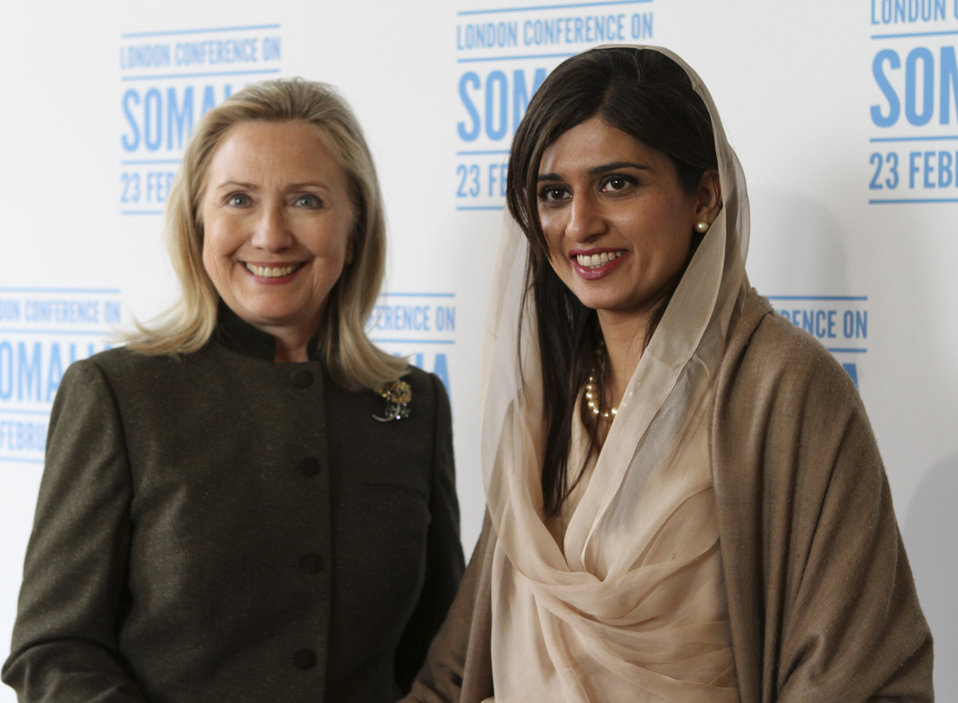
Secretary Clinton Meets With Pakistani Foreign Minister

U.S. Secretary of State Hillary Rodham Clinton meets with Pakistani Foreign Minister Hina Rabbani Khar on the margins of the London Conference on Somalia, hosted by UK Prime Minister David Cameron, on February 23, 2012.